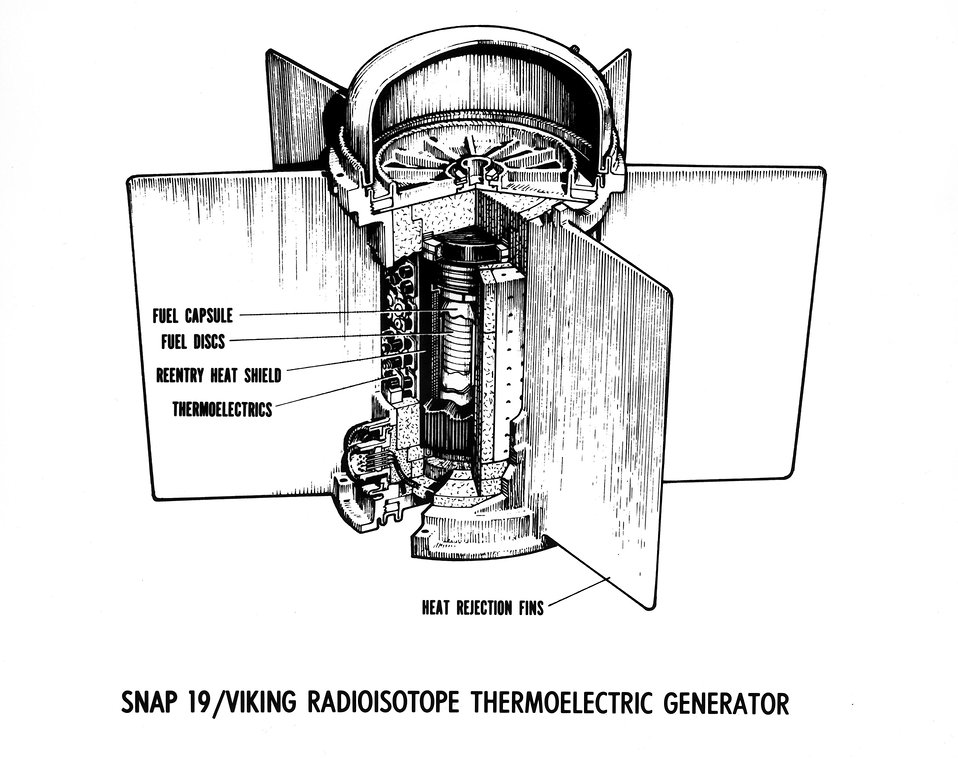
Cutaway of SNAP-19/Viking radioisotope thermometric generator (atomic battery). Two of these ERDA-developed generators will provide a total of 70 watts of electrical power for the NASA Viking Mars lander.